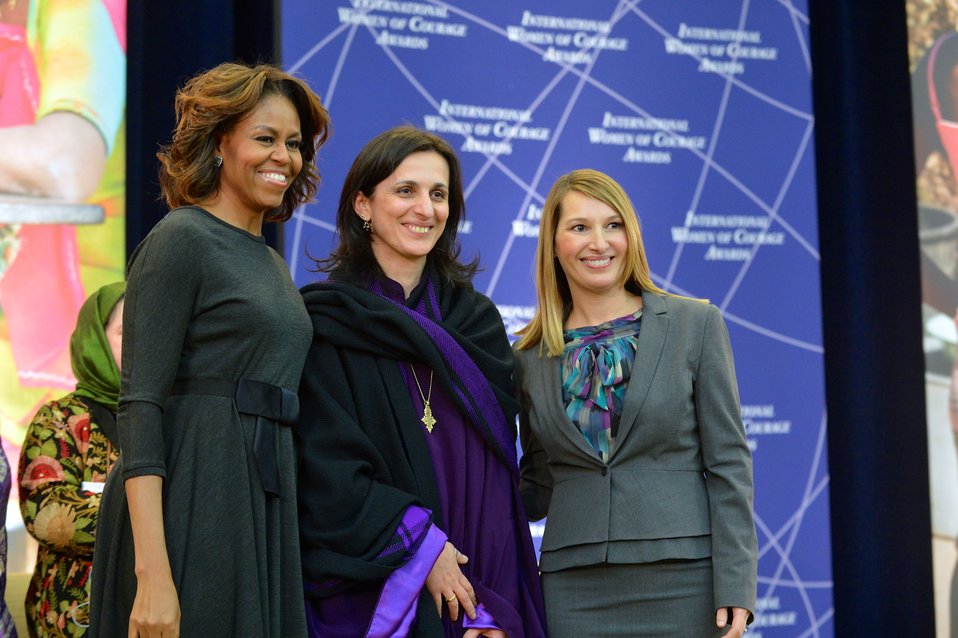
First Lady Michelle Obama and Deputy Secretary Higginbottom With Bishop Rusudan Gotsiridze of Georgia

First Lady Michelle Obama and Deputy Secretary Heather Higginbottom pose for a photo with 2014 International Women of Courage Awardee Rusudan Gotsiridze, Bishop of the Evangelical Baptist Church of Georgia, at the 2014 Secretary of State’s International Women of Courage Award Ceremony at the U.S. Department of State in Washington, D.C., on March 4, 2014.